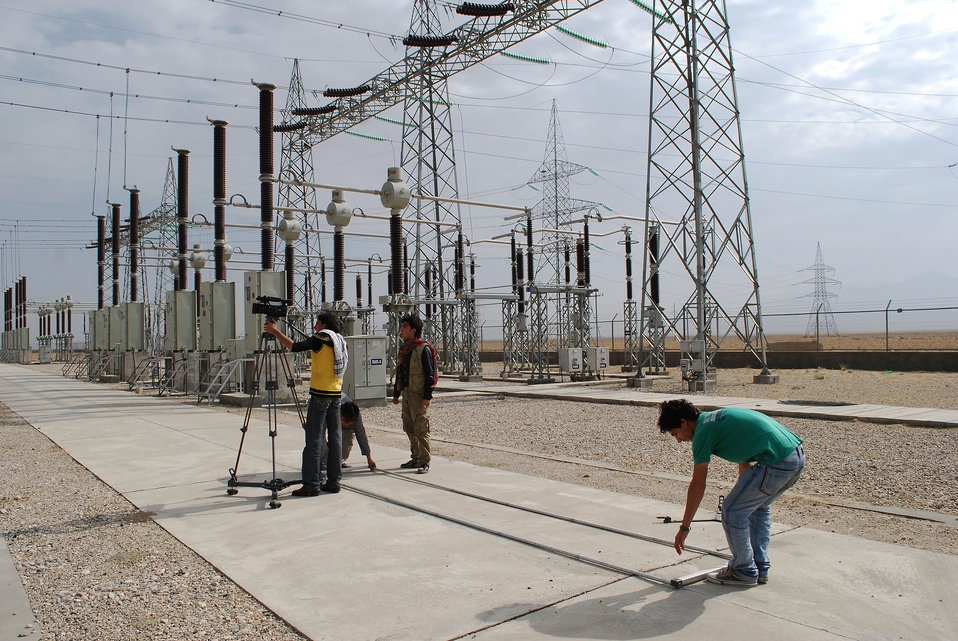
'On the Road' in Balkh Province